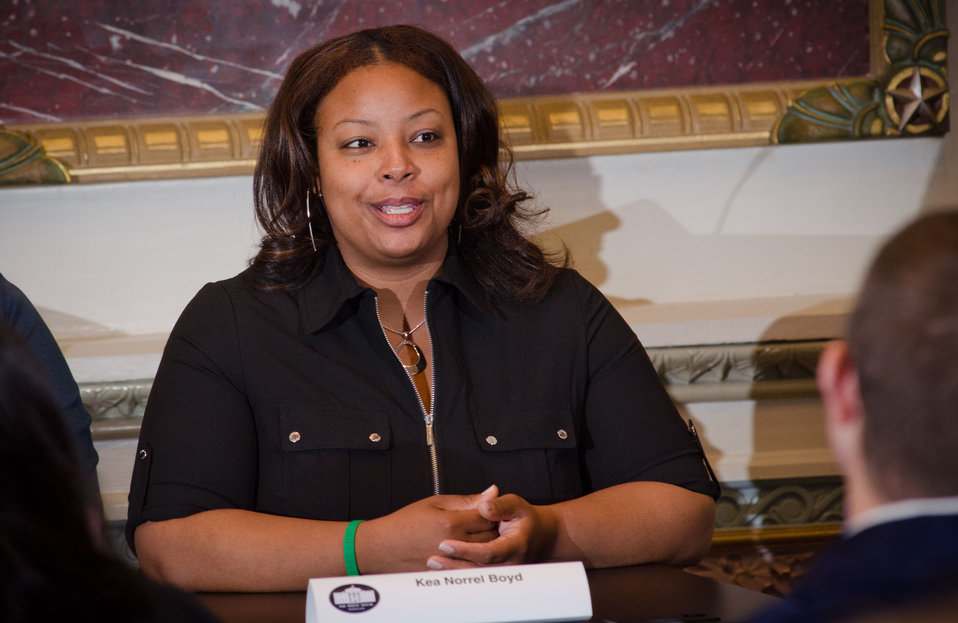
Wayne County, Michigan 4-H Mentoring Program Educator Kea Norrell Boyd speaks at the Champions of Change event in the Indian Treaty Room at the Executive Office Building in Washington, D.C. on Tuesday, Oct. 9, 2012. The Champions of Change program was created to honor ordinary Americans doing great work in their communities. Each week, a different sector is highlighted and groups of Champions, ranging from educators to entrepreneurs to community leaders, are recognized for the work they are doing to serve and strengthen their communities.